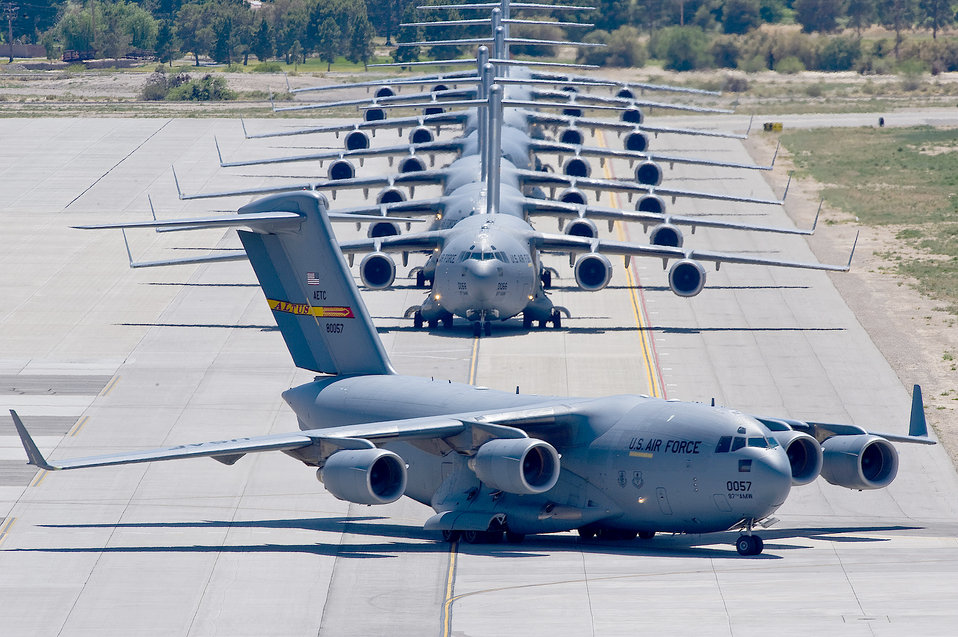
Mobility Air Forces exercise

C-17 Globemaster IIIs marshal out to the flightline at Nellis Air Force Base, Nev., during a Mobility Air Forces exercise held over the Nevada Test and Training Range May 19, 2010.